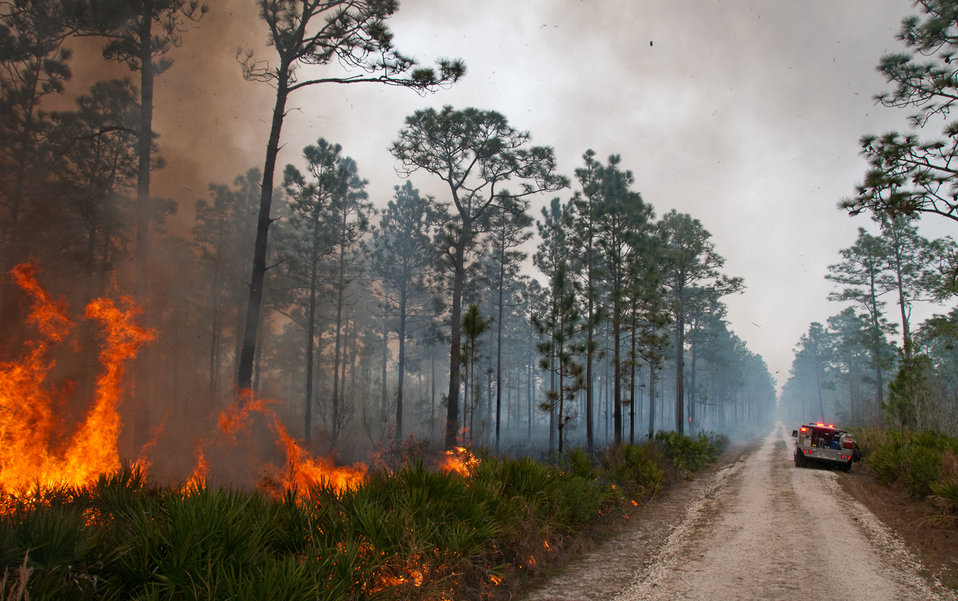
Lake Woodruff Volusia 5 Prescribed Fire Febuary 2014

A USFWS fire engine monitors the progress of the prescribed fire and looks for spot fires. On February, 12 2014 USFWS firefighters conducted a 137 acre prescribed fire at Lake Woodruff NWR to reduce the wildfire risk and enhance the wildlife habitat on the southern end of the refuge.